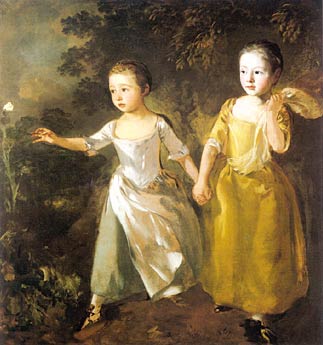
Gainsborough - The Painters Daughters Chasing a Butterfly